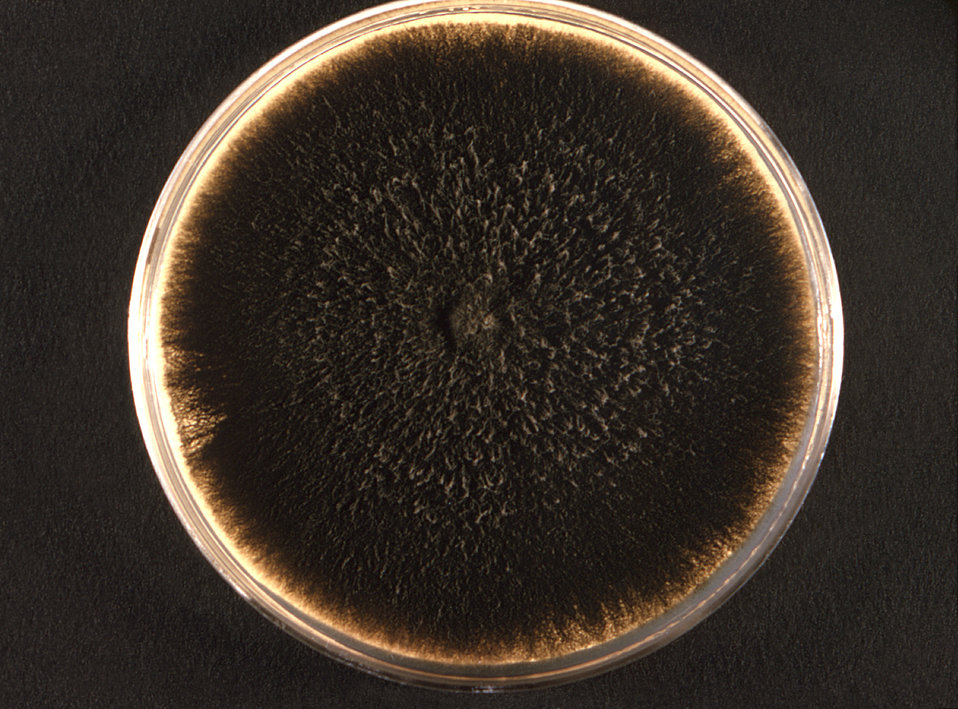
Photographed from the front, this 1971 image depicted a Petri dish within which a Bipolaris hawaiiensis fungal colony had been cultured. On its front surface, as depicted here, you'll note that the colonial texture appears 'woolly'. Normally, the reverse coloration appears as black, but is sometimes observed as brown with areas becoming black.